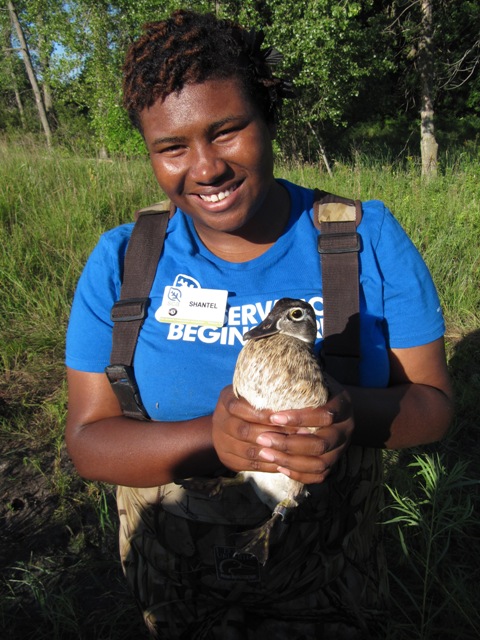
Career Discover Intern, Shantel, learns about banding ducks

U.S. Fish and Wildlife Service